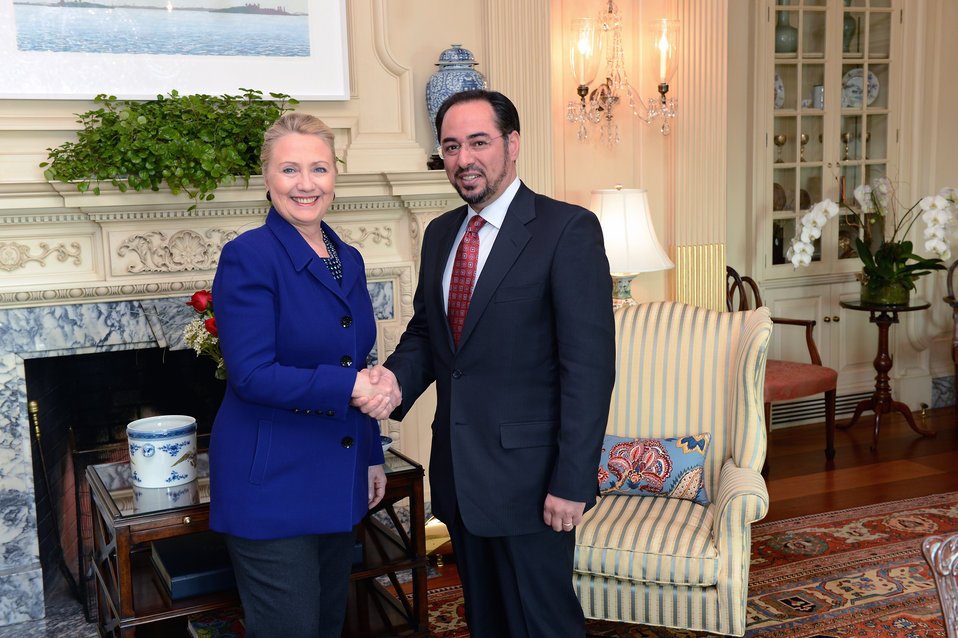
Secretary Clinton Meets With Afghanistan’s High Peace Council Chairman Rabbani

U.S. Secretary of State Hillary Rodham Clinton meets with Chairman of Afghanistan’s High Peace Council Salahuddin Rabbani at the U.S. Department of State in Washington, D.C. on November 29, 2012.